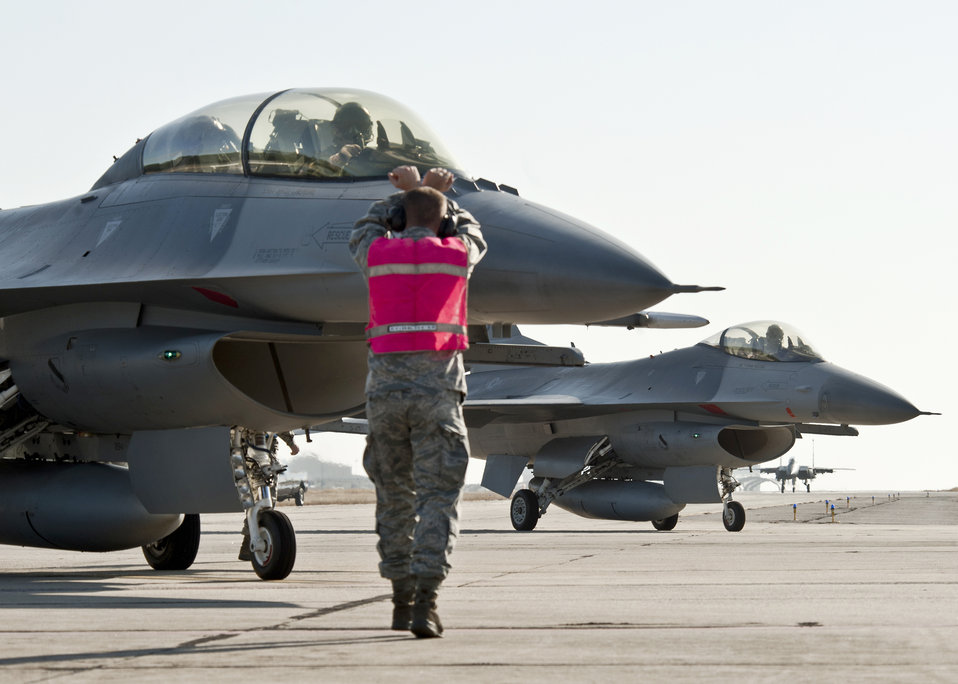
F-15E Strike Eagles get new radar

A maintainer from the 46th Maintenance Group halts one F-16 Fighting Falcon as another rolls by and an F-15E Strike Eagle taxis in the distance Jan. 18, 2011, at Eglin Air Force Base, Fla.